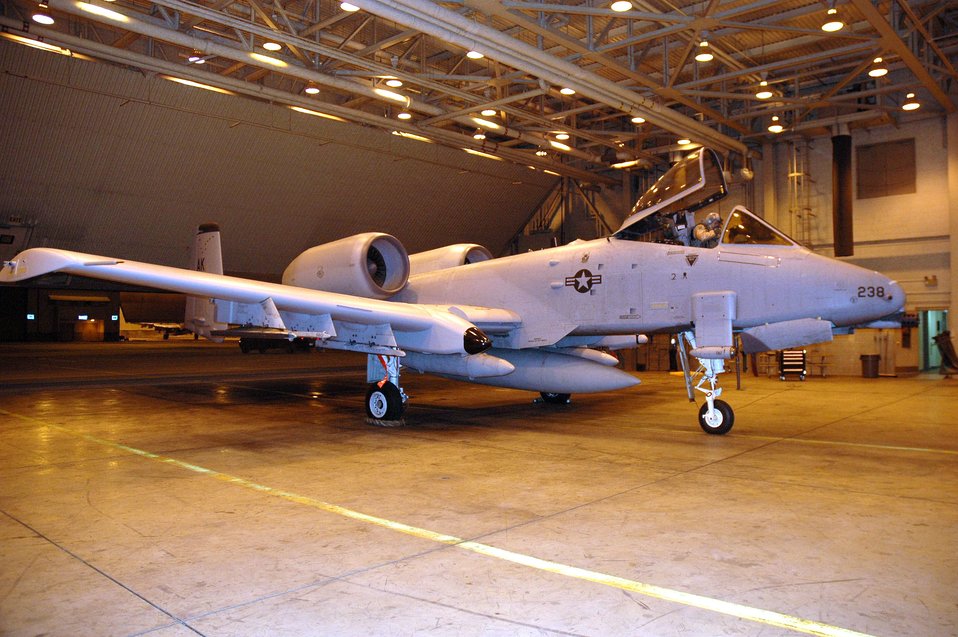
A-10s deploy

EIELSON AIR FORCE BASE, Alaska (AFPN) -- Capt. Razvan Radoescu completes pre-flight checks before his deployment. Captain Radoescu is a pilot with the 355th Fighter Squadron.